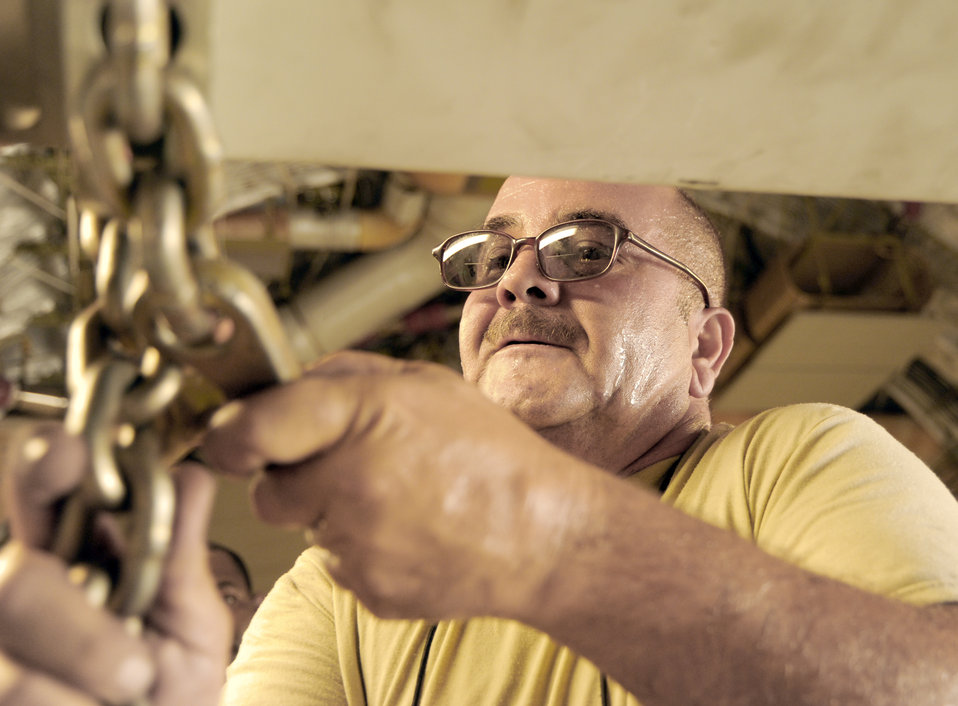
Operation Everest C-17 airdrop

Tech. Sgt. Jose Gonzalez assists in preparing a C-17 Globemaster III prior to an airdrop mission Aug. 13, 2010, in Southwest Asia. Sergeant Gonzalez is with the 8th Expeditionary Air Mobility Squadron.